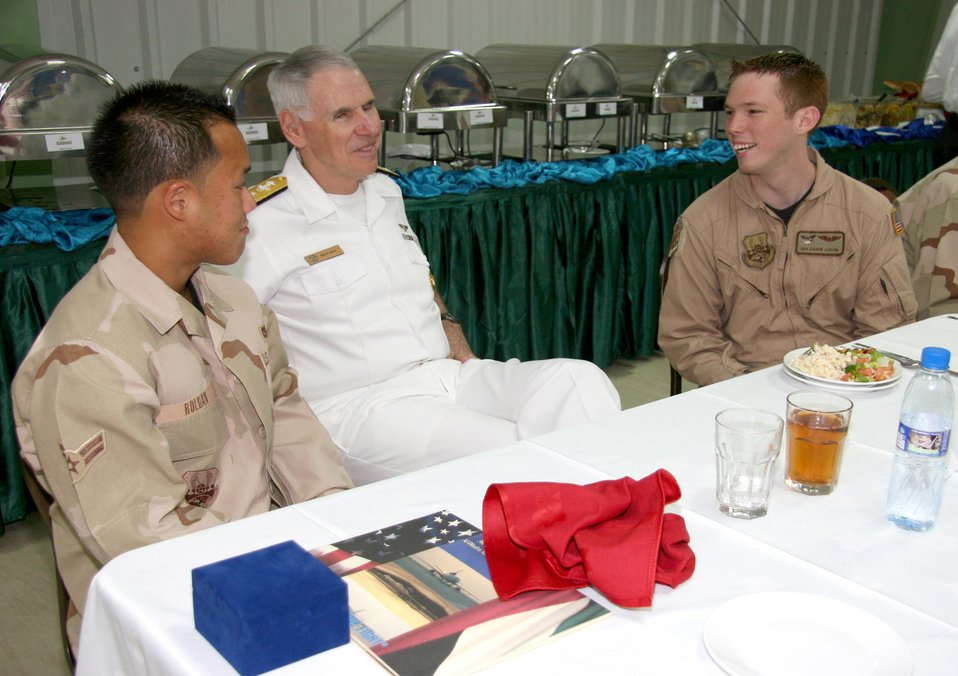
Admiral Fallon visits 380th AEW Airmen

Adm. William J. Fallon talks to Airman 1st Class Alfred Roldan (left) and Senior Airman Aaron Austin during a luncheon Sept. 17 at the 380th Air Expeditionary Wing in Southwest Asia. Admiral Fallon is the U.S. Central Command commander. Airman Roldan is with the 380th Expeditionary Civil Engineer Squadron and Airman Austin is with the 908th Expeditionary Air Refueling Squadron.